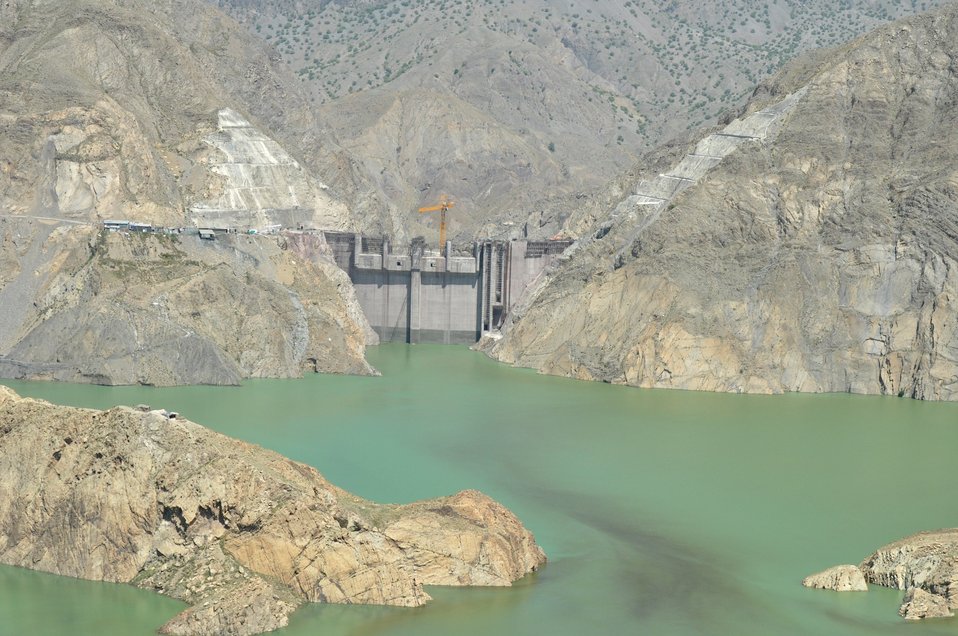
Gomal Zam Dam

April 21, 2011 - USAID’s Pakistan Mission Director Andrew Sisson and Director General of the Frontier Works Organization, Major General Najeeb Ullah Khan, visit the construction work at the Gomal Zam Dam. The United States Agency for International Development (USAID) is providing $40 million to finance the completion of the dam, transmission line, and hydropower components of the project.